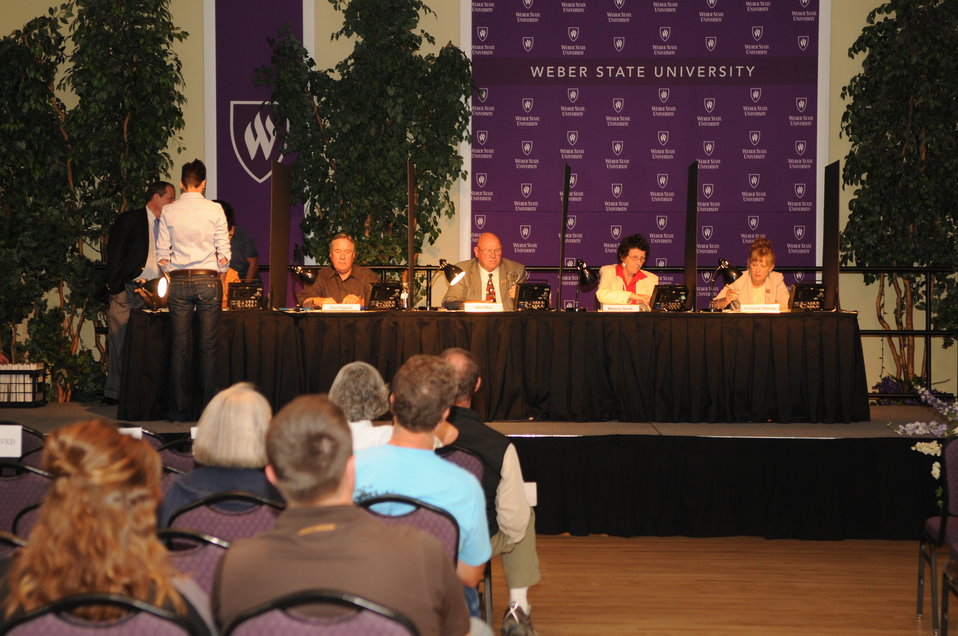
Judging

The U.S. Fish & Wildlife Service sponsored the 2012 Federal Duck Stamp Art Contest September 28 and 29 in Ogden, Utah, at Weber State University. A panel of five judges was responsible for choosing the art work used to design the 2013-2014 Migratory Bird Hunting and Conservation Stamp.